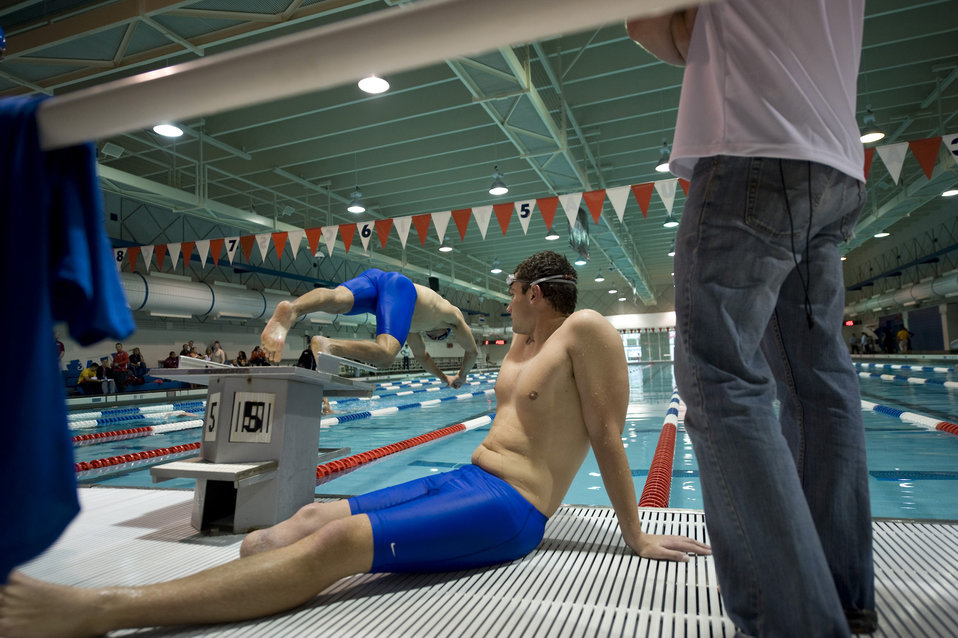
Warrior Games Airmen prepare for competition

Second Lt. Ryan McGuire watches as his teammate, Staff Sgt. Marc Esposito, dives off the starting block during swim practice May 11, 2010, at the Olympic Training Center in Colorado Springs, Colo. Lieutenant McGuire is a below-the-knee-amputee competing in the inaugural Warrior Games through May 14, 2010.